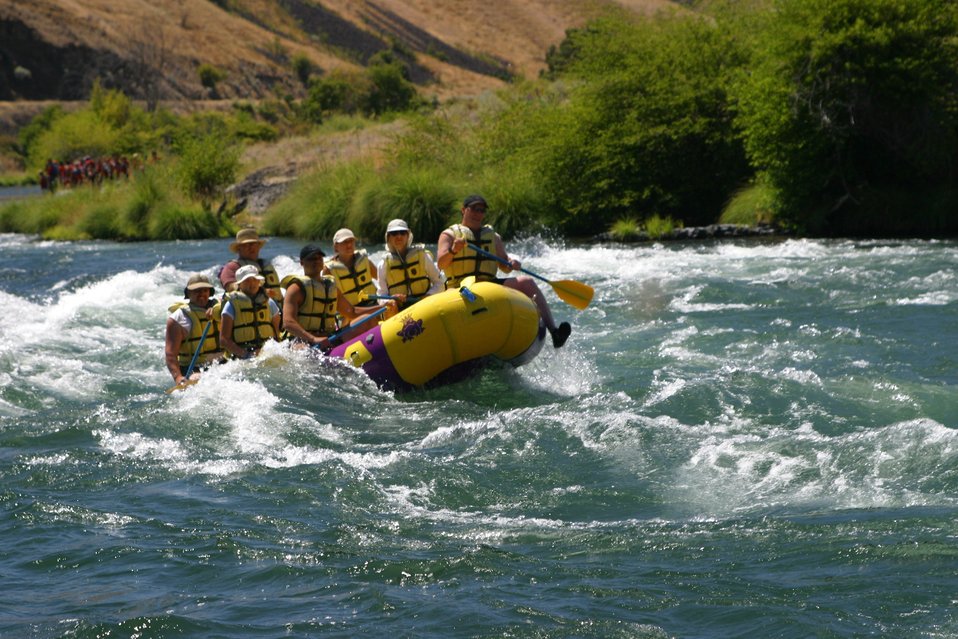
Elevator Rapids near Mile 46 on the Lower Deshcutes River. 7/26/03 Pelton Dam 3600 cfs: Moody Rapids 4300 cfs.